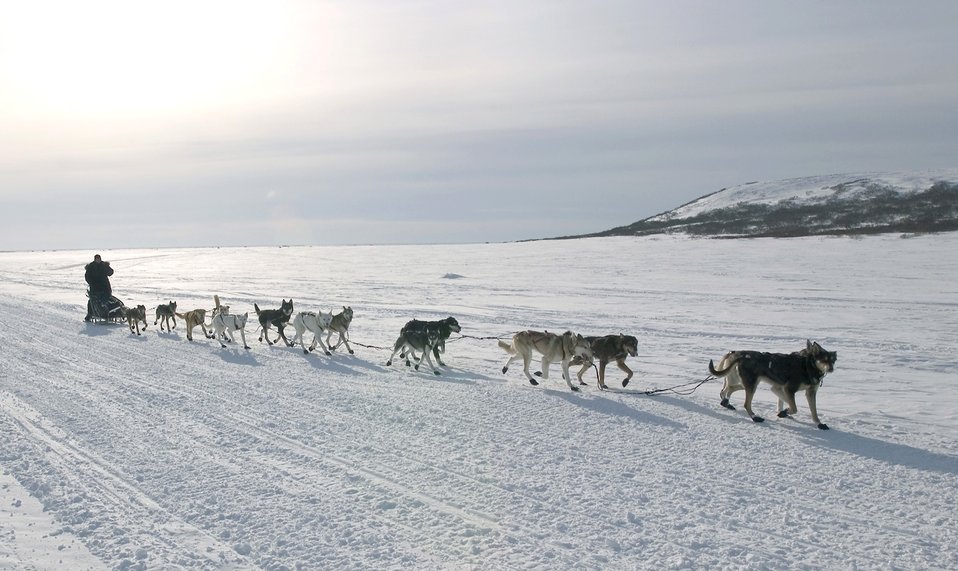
Air Force doctor finishes Iditarod with flourish

Maj. (Dr.) Thomas Knolmayer and his sled dog team cover the last 16 miles of the 2006 Iditarod Sled Dog Race in Nome, Alaska, Friday, March 17, 2006. Doctor Knolmayer finished the 1,150-mile race across Alaska in 11 days, 22 hours and 13 minutes, bettering his time from last year by 47 hours. He is chief of surgery at the 3rd Medical Group at Elmendorf Air Force Base, Alaska.